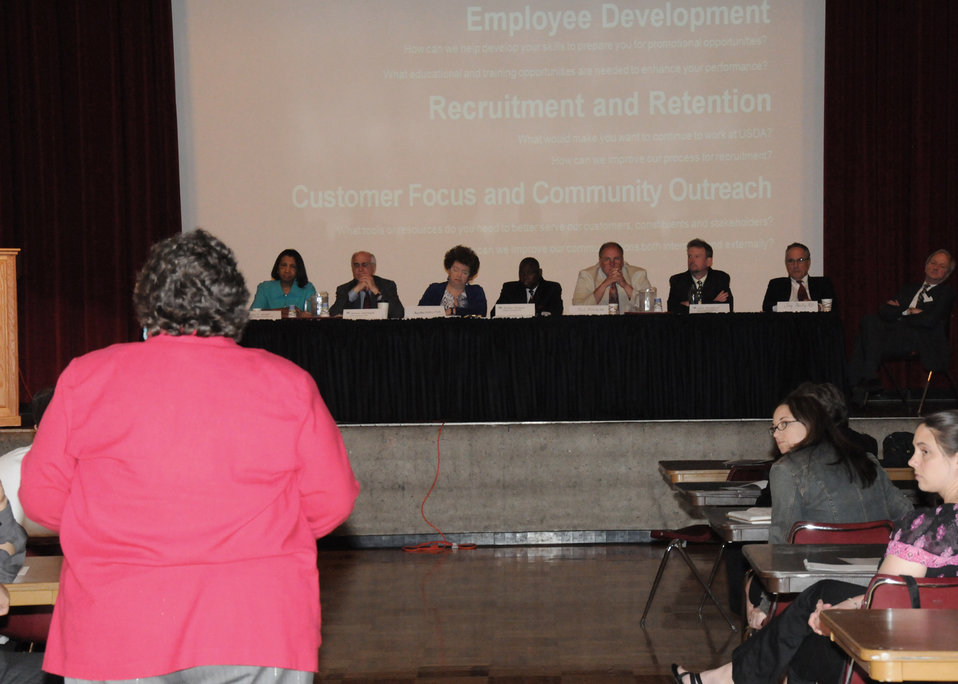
(L to R) Farm Service Agency State Executive Director Richard Burke, Deputy Assistant Secretary of Departmental Management Alma Hobbs, Under Secretary for Natural Resources and Environment Harris Sherman, Farm Service Agency representative Marsha Jette, Forest Service Homeland Security Manager Arthur Bryant, Farm Service Agency representative Paul Hlublick, Departmental Initiative and Internal Affairs Director for Grain Inspection, Packers and Stockyards Administration John Pitchford, Rural Development representative Jay Healy, and New Hampshire State Executive Director Jay Phinizy listen to an Agriculture employee concerns at the listening session on the Cultural Transformation of the United States Department of Agriculture (USDA). The session was held on the campus of the University of Massachusetts in Amherst, MA., on Wednesday, May 5, 2010. USDA photo 10di1342-65